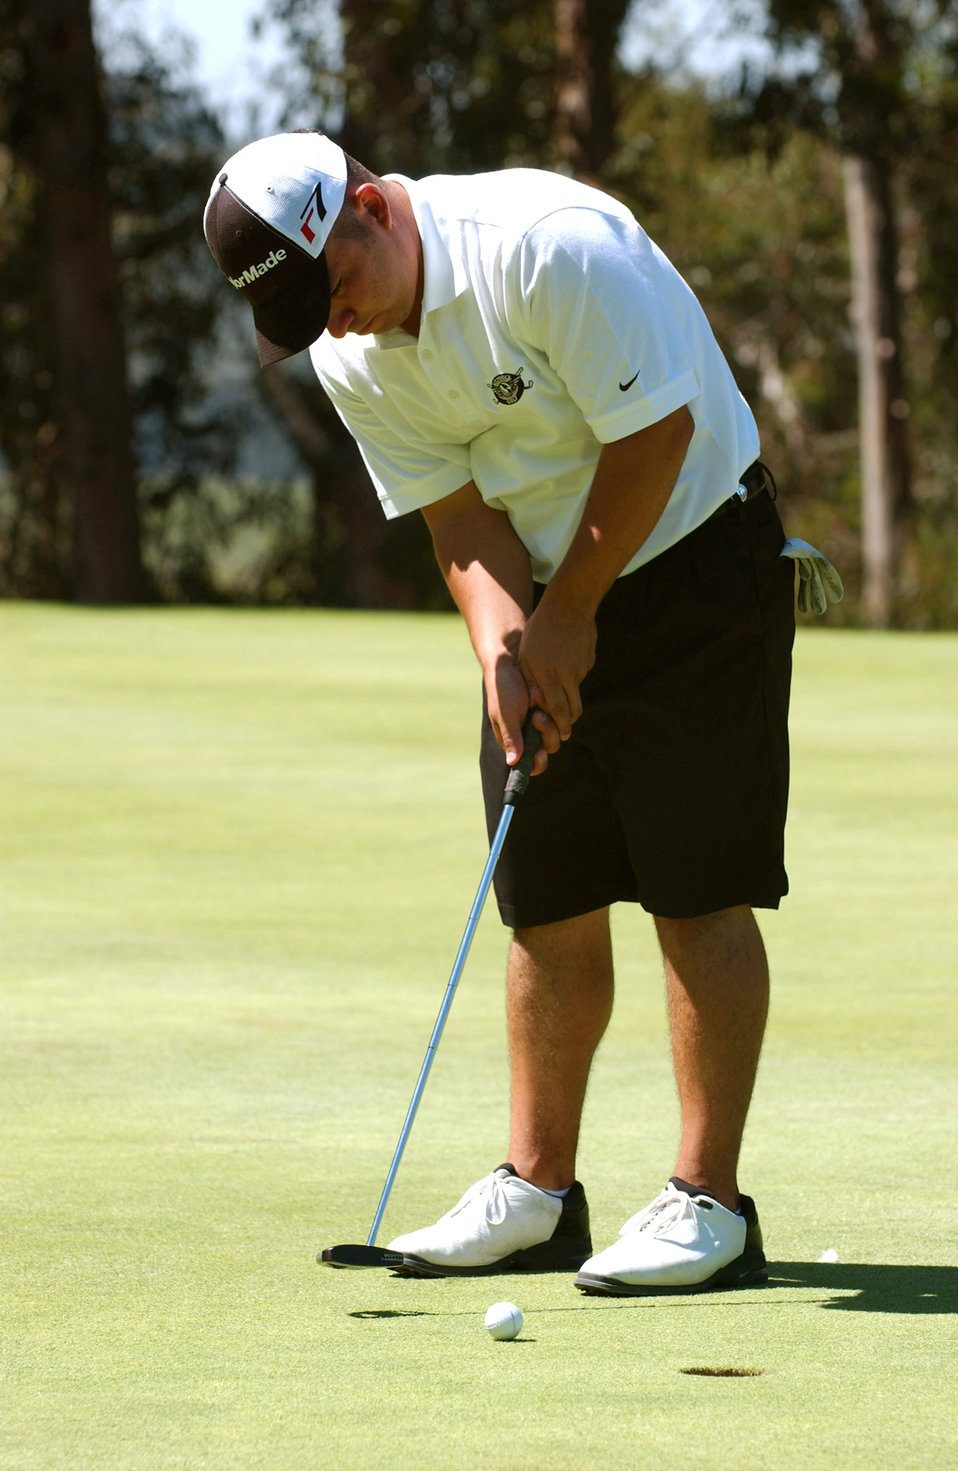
Air Force sweeps armed forces golf tournament

The Air Force's Arnell Garza putts for birdie during the 2006 Armed Forces Golf Championship at Vandenberg Air Force Base, Calif., on Aug. 9. Air Force golfers took top honors in tournament, winning the men's and women's team competitions as well as the individual men's and women's competitions. Garza is stationed at Fairchild Air Force Base, Wash.